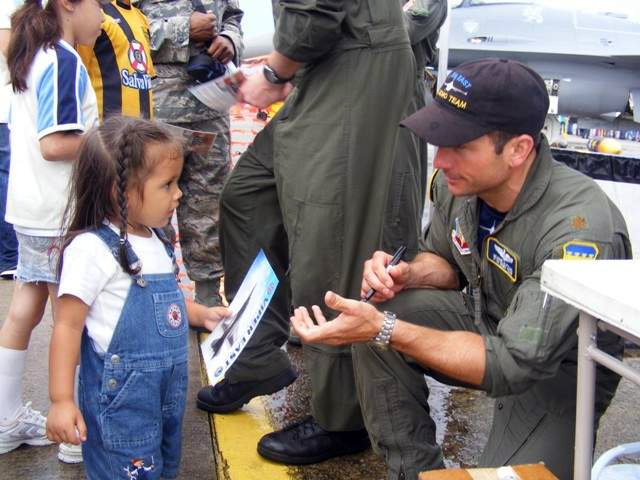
Honduras airshow aids local hospital

Maj. George Clifford signs an autograph for a Honduran girl June 20 at San Pedro Sula, Honduras. More than 30 Airmen participated at the international airshow. The more than $35,000 proceeds from the show will help build a children's intensive care unit at a local hospital. Major Clifford is a Viper East F-16 Demonstration Team pilot.